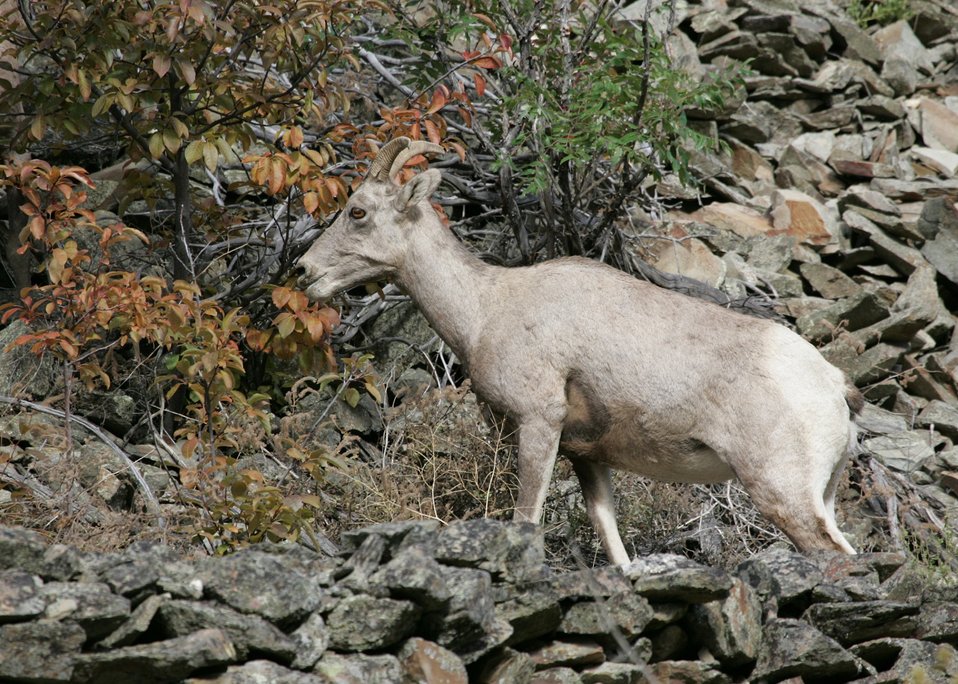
Bighorn sheep along Connor Creek in eastern Oregon.